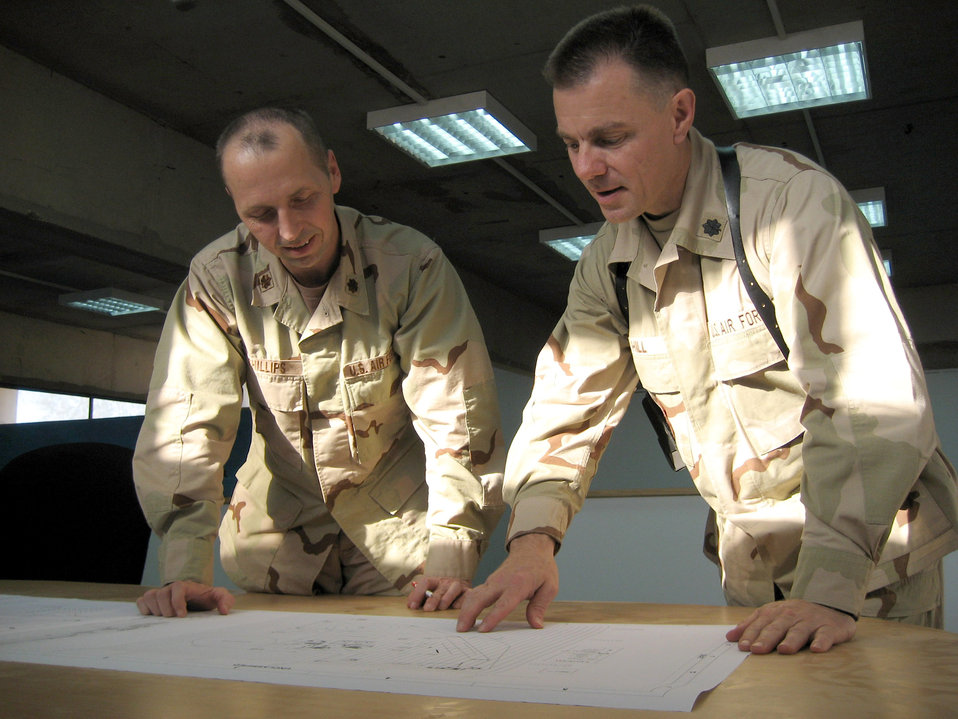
RED HORSE: Mobilized civil engineering at its finest

Maj. Steve Phillips and Lt. Col. Scott Hill review plans for the Besmaya, Iraq, basecamp. The forward operating base was ordered to house the 3rd Brigade Combat Team of the 3rd Infantry Division from Fort Stewart, Ga., who is tasked as part of the Baghdad Security Plan. Major Phillips is the lead Air Force engineer for the Besmaya beddown project. Colonel Hill is the 557th Expeditionary RED HORSE Squadron director of operations.